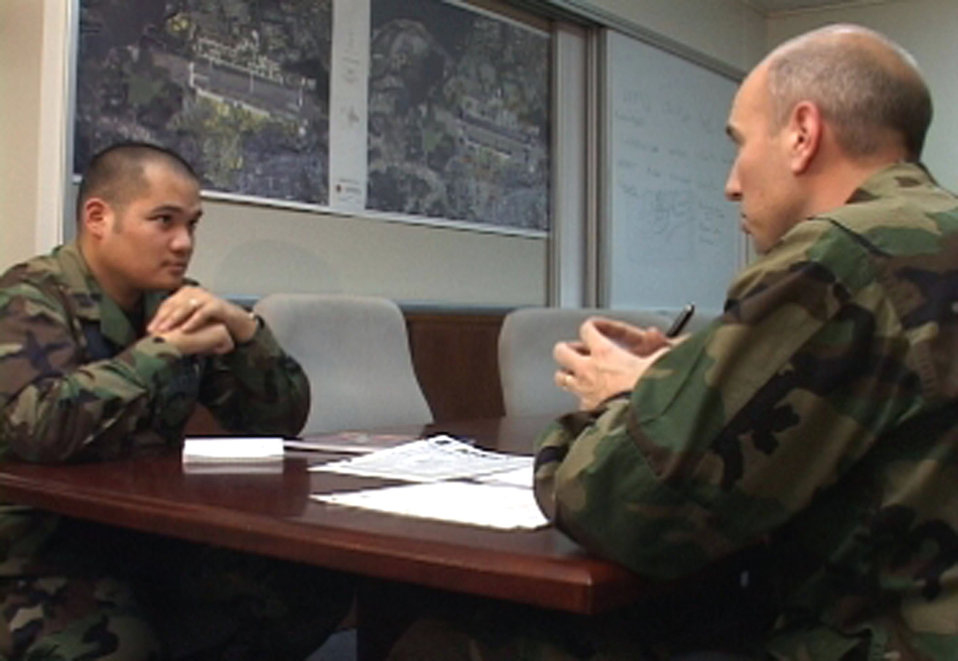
Mentoring helps develop future Air Force

Lt. Col. Joseph Marcinkevich (right) mentors Capt. Harold Tongson during a feedback session. Air Force members are required to have at least an initial, mid-term, and follow-up session with their supervisors to identify strengths and areas needing improvement.